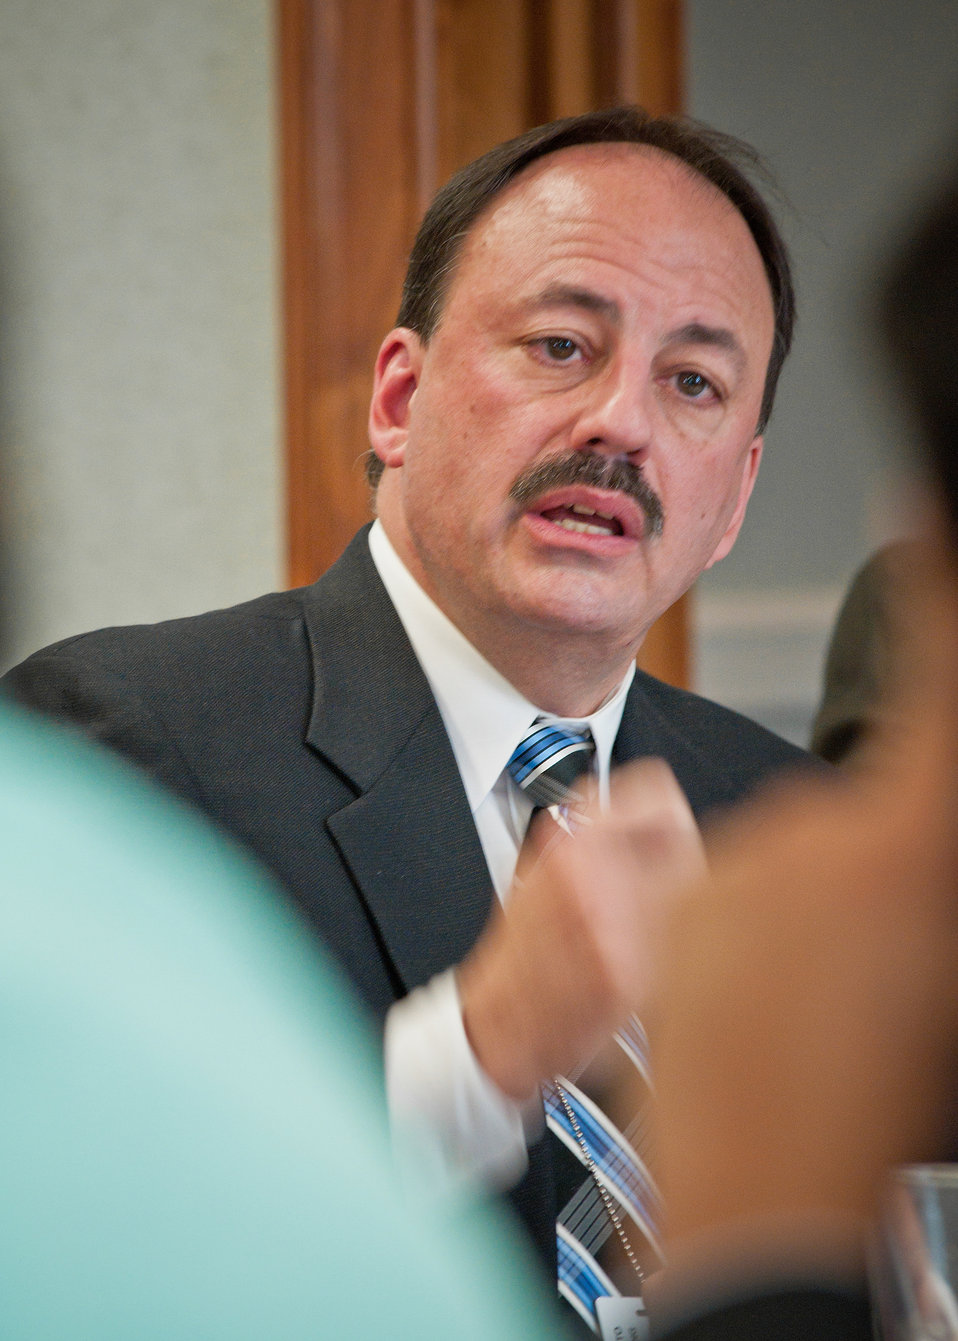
Roger Rivera, President and Founder, National Hispanic Environmental Council offers an opinion during the facilitated discussion: “Where Can You Assist?” at the United States Department of Agriculture Hispanic Roundtable at the United States Department of Agriculture, Monday, December 5, 2011 in Washington, DC. The roundtable focused on recruitment, retention and employee development for the purpose of developing the USDA Hispanic recruitment Plan. The roundtable hosted several national Hispanic partners and recognized USDA Hispanic organizations and associations.